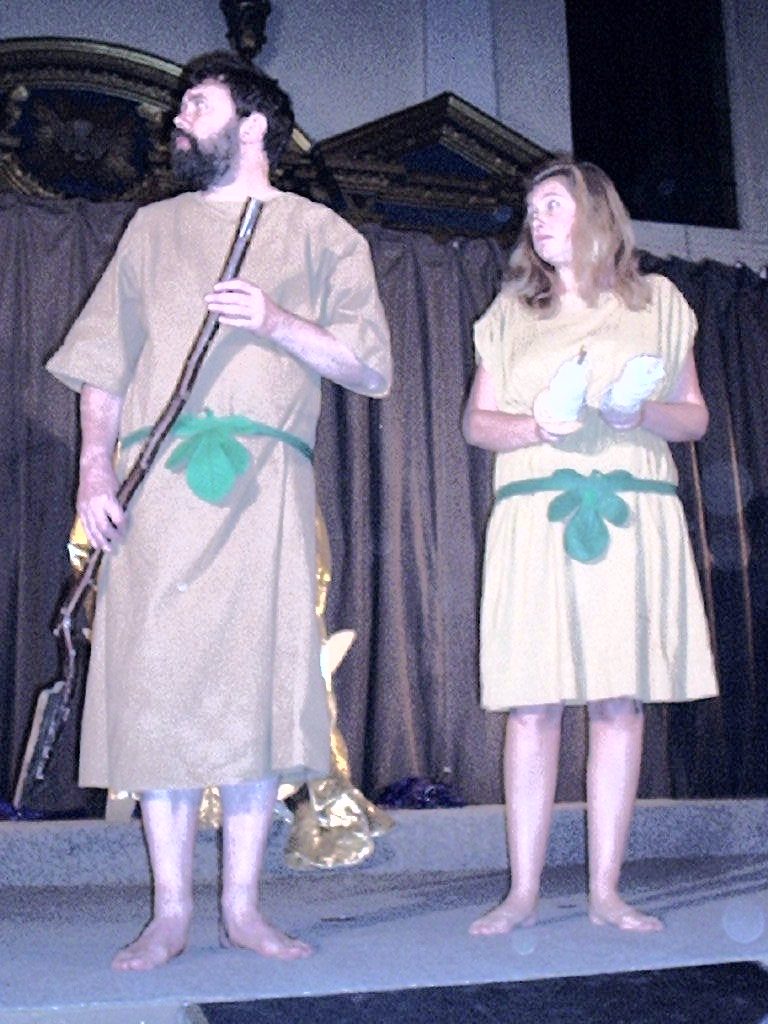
04b266 adamandeve